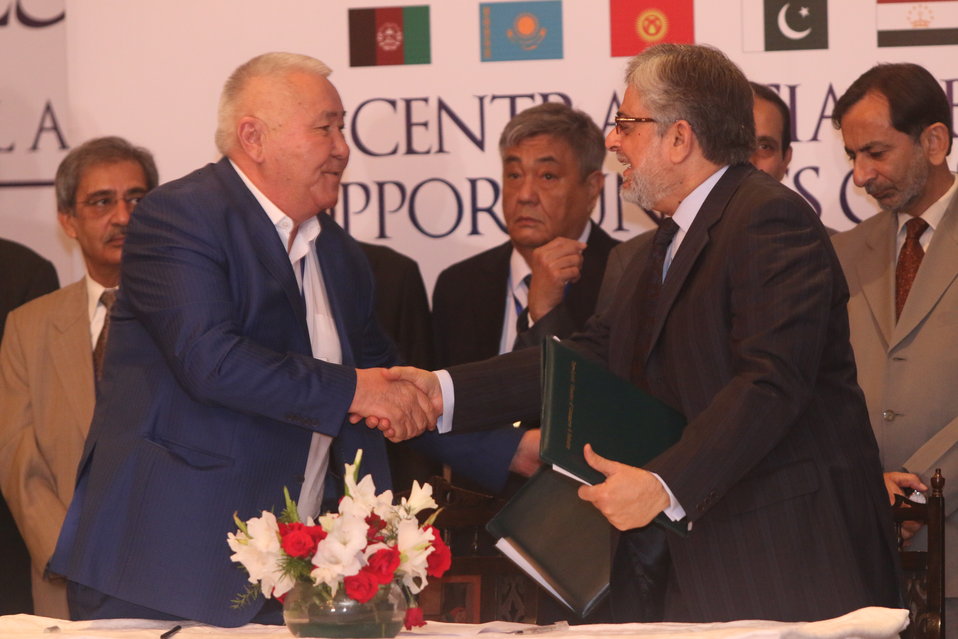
CABOC 2014